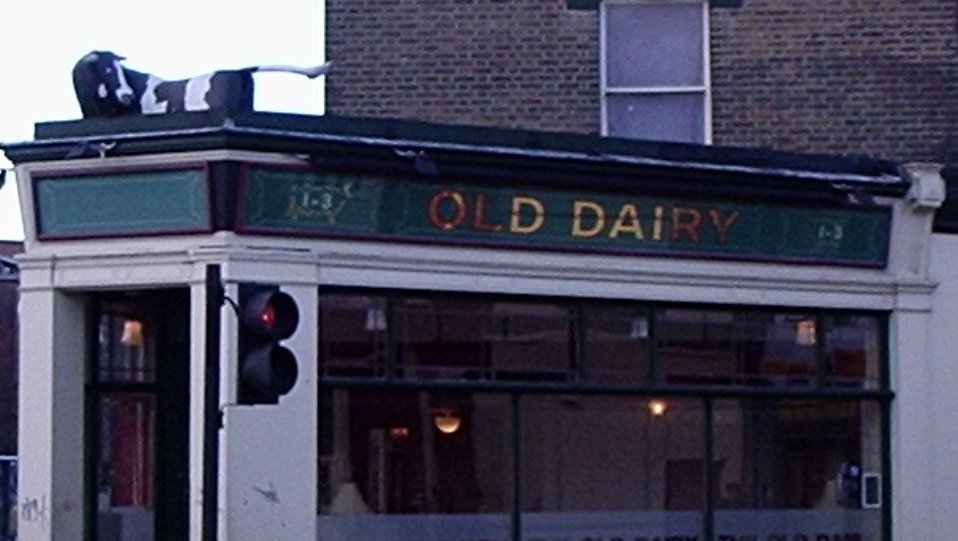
03C236 old dairy